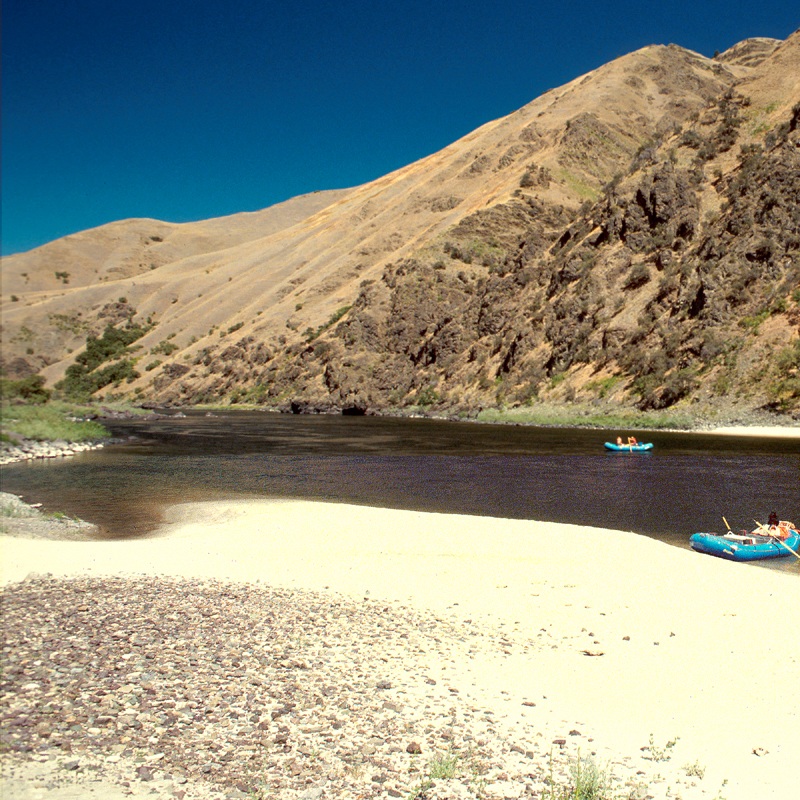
Rafting Cottonwood Field Office UCSC Upper Columbia Salmon Clearwater District